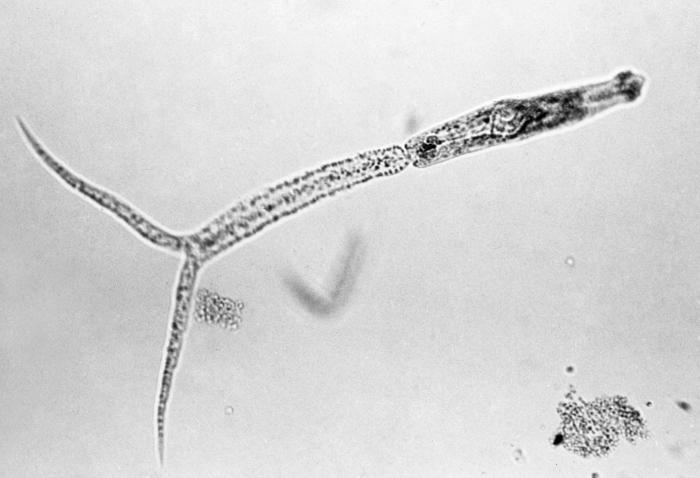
This historic 1942 photomicrograph revealed some of the morphologic details displayed by a schistosomal cercaria, which is the the larval stage of a parasite that causes 'swimmer's itch', and was magnified approximately 150x.